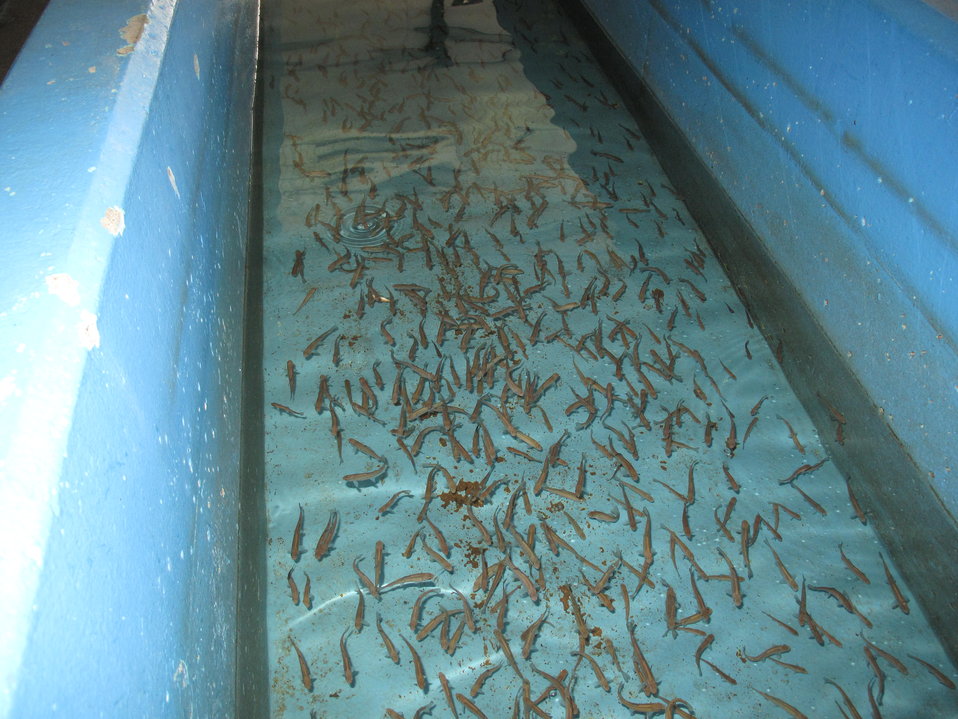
Leadville National Fish Hatchery

Year-old greenback cutthroat trout